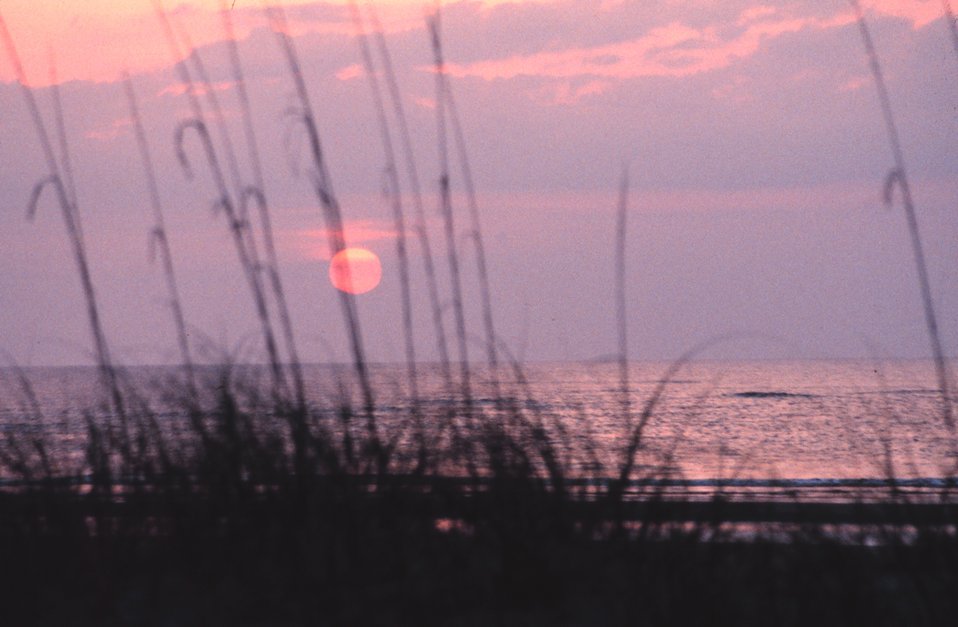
Sunrise as seen through the sea oats at Nannygoat Beach.